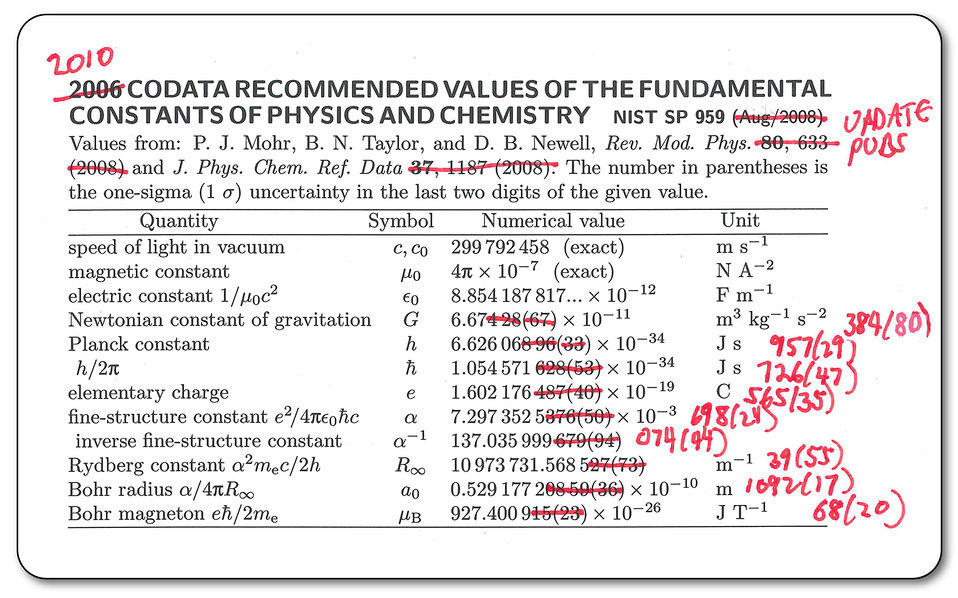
Constants